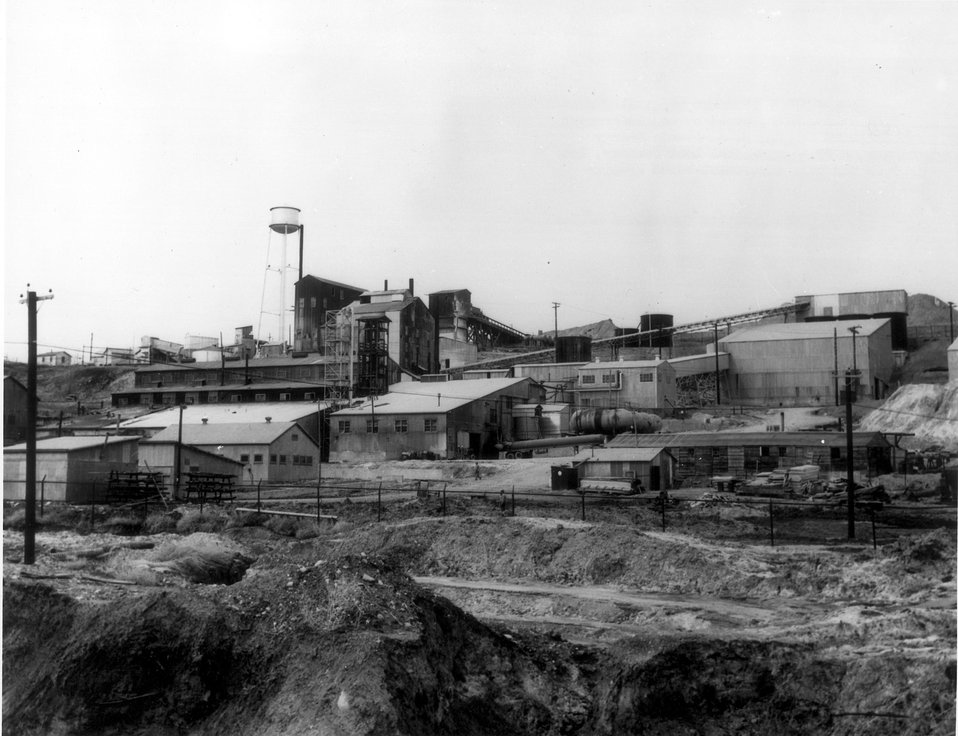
Uranium processing mill at Monticello, Utah, owned by the government and operated for the U.S. Atomic Energy Commission by the National Lead Company, Inc. This is the only government-owned uranium mill. c. 1957